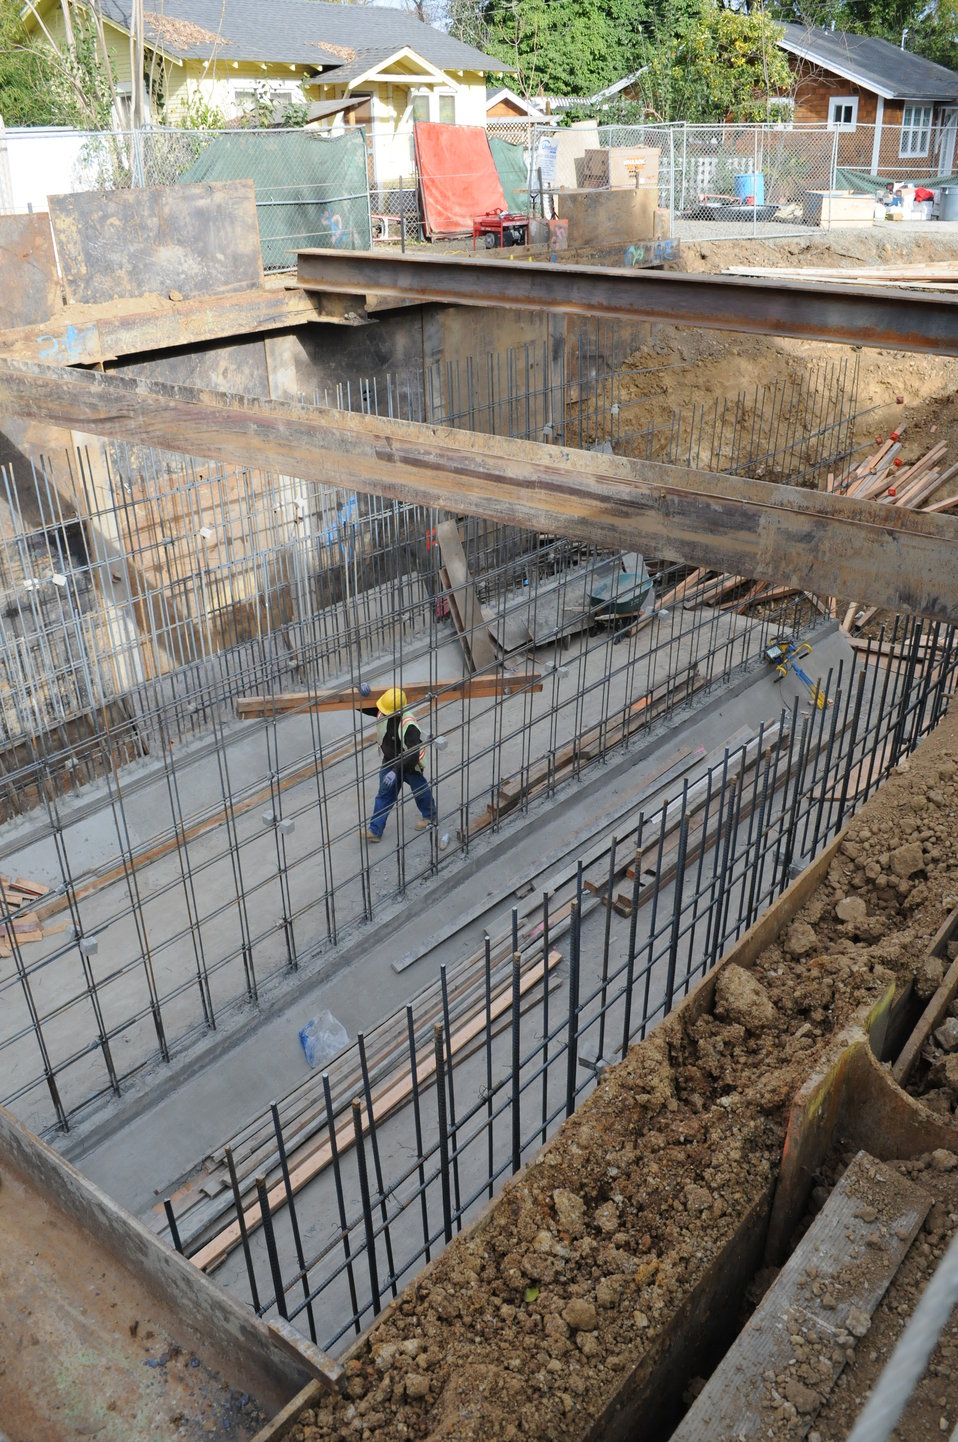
Napa Creek box culverts reduce flood risk

A construction worker carries lumber through a set of box culverts under construction along Napa Creek in Napa, Calif., Jan. 18, 2012. The culverts – tunnels large enough for a car to drive through – will channel flood water from the creek more quickly to the Napa River and way from homes and businesses. The $14.8 million project, funded by the American Recovery and Reinvestment Act of 2009, is a joint effort of the U.S. Army Corps of Engineers Sacramento District, the city of Napa and the Napa Flood Control and Water Conservation District to reduce flood risk for the city.